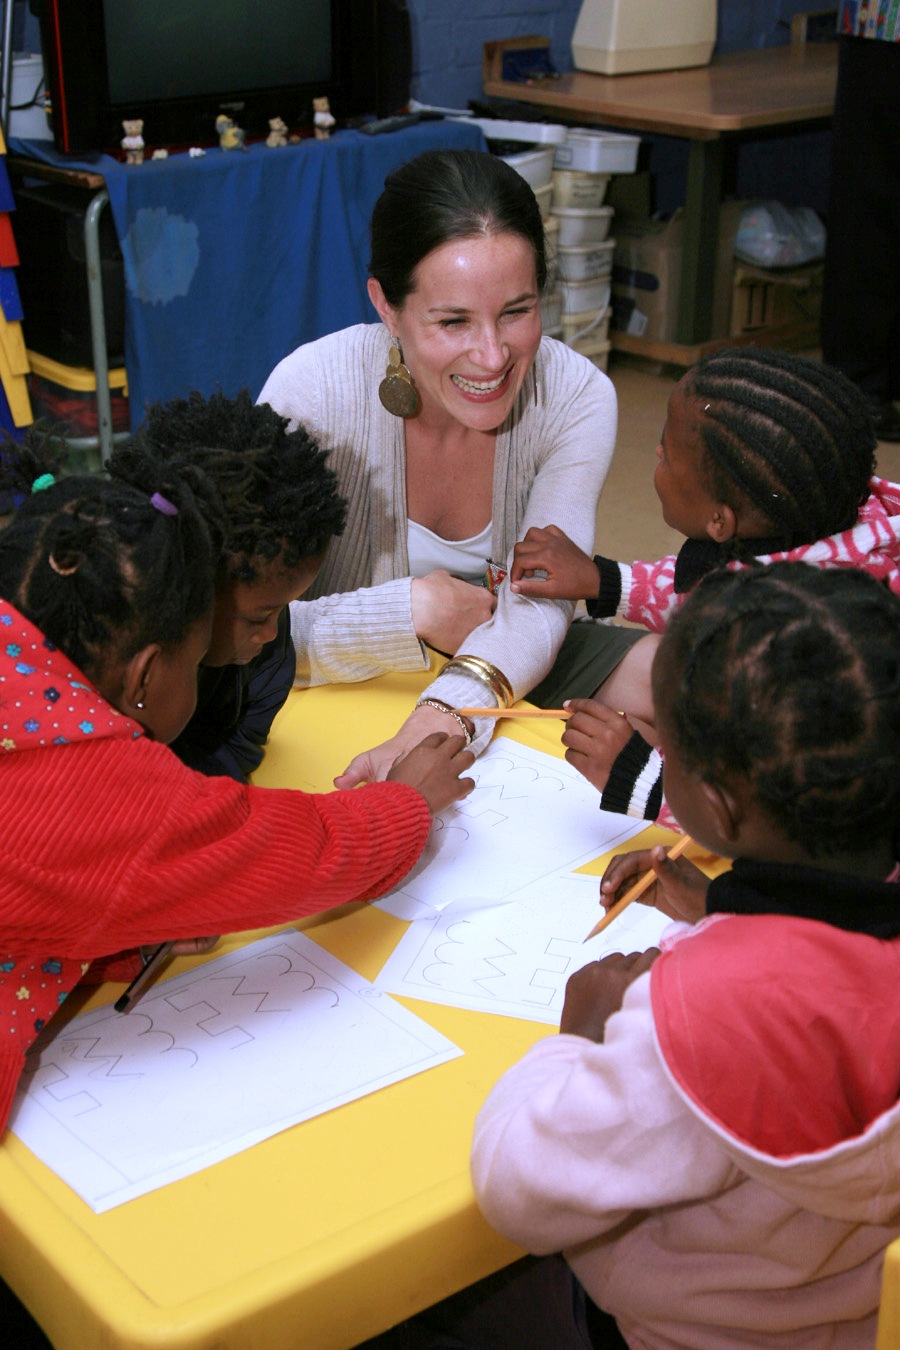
Ashley Biden Plays Games With South African Children

Ashley Biden, daughter of Vice President and Dr. Biden, plays educational games with South African children during her visit to Mapetla Day Care Centre in Soweto, Johannesburg, South Africa, on June 10, 2010.